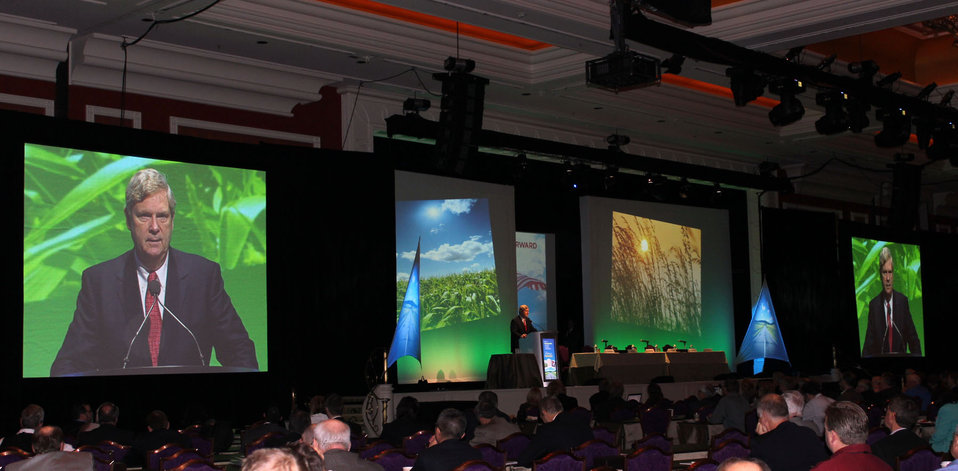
Agriculture Secretary Tom Vilsack makes remarks at the National Ethanol Conference 'Driving Forward' in Las Vegas, NV., on February 8, 2013.